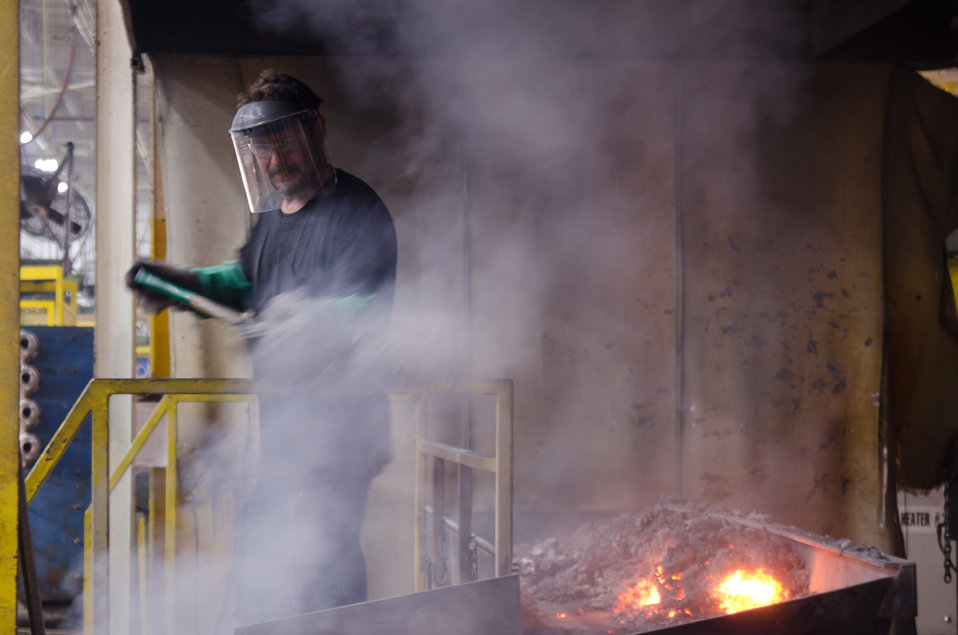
Melter operator Carl Welborn faces flames and intense heat to forklift foundry ingots into; and shovels slag out of a furnace crucible at Port City Group’s Port City Castings Corporation, manufacturer of high-pressure aluminum die-castings, mostly for the automotive industry, in Muskegon, MI, facility on Wednesday July 20, 2011. Port City Group boosted its employment by 12 percent over last year thanks to two Rural Business Guaranteed Loans totaling $9.6 million. In its 80,000 sq. ft. facility, machines that range from 800 – 1,600 tons, and cast A380 aluminum alloy products from melted ingots of aluminum, into automotive components of U.S.A. made vehicles. The process features a variety of robotic presses; computer controlled machining; quality control facility; and complete measurement and testing laboratory. In 2009 banks were backing out of loans for PCG equipment purchase agreements. The U.S. Department of Agriculture (USDA) loan guarantee helped make the loan possible with its guarantee. PCG obtained the needed robotic and other equipment. This resulted in a stable workforce that has since grown. When asked about their USDA experience, Port City Group Sales Manager Laura LaGuire said, “It was great! They were very helpful. Everything that came up was handled smoothly, the money came in place when it was needed, and it was a very smooth transition.”